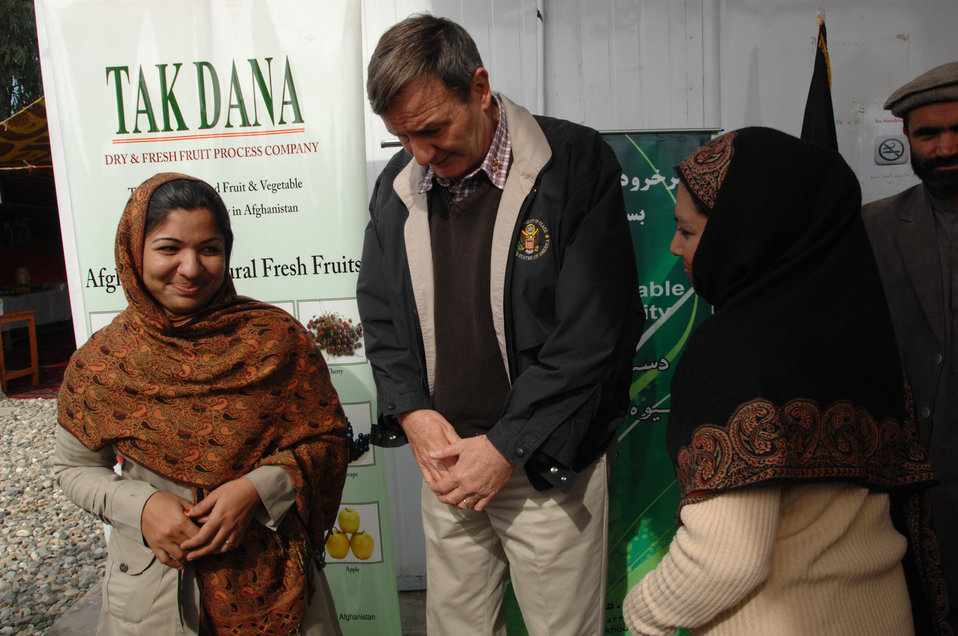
110209sv Shah275

U.S. Ambassador Karl W. Eikenberry talks with two of the managers of the Surkh Rod vegetable packing facility in Nangarhar province on Wednesday, February 9, 2011. (S.K. Vemmer/Department of State)